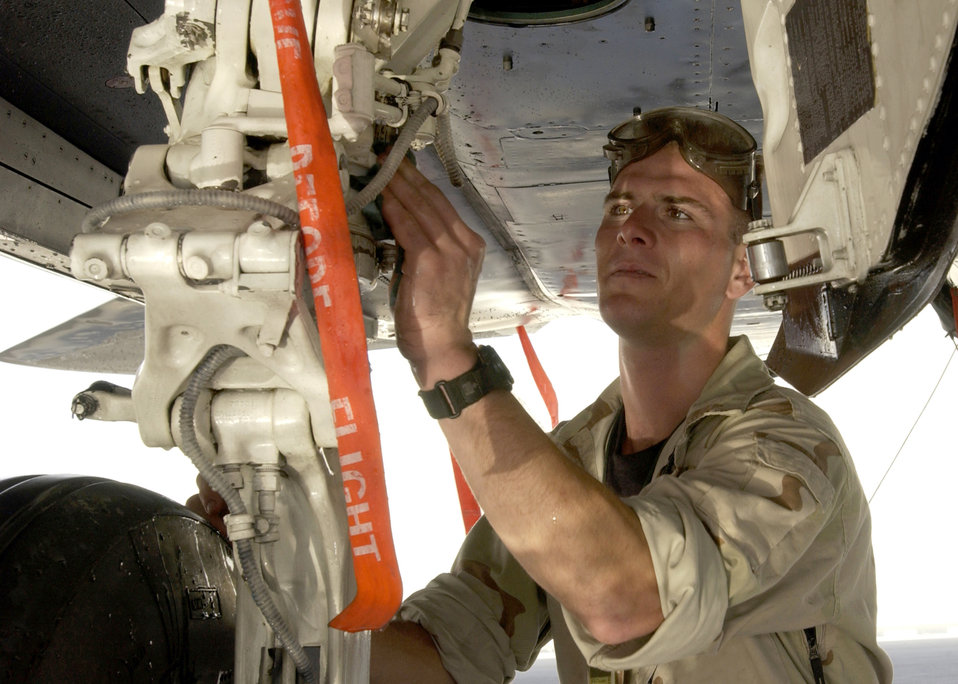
A clean strut

SOUTHWEST ASIA -- Staff Sgt. Joseph Salisbury cleans the main strut on an F-15E Strike Eagle aircraft at a forward-deployed location. His goal is to keep sand from entering the mechanical linkage and prevent landing-gear problems. Sergeant Salisbury is a crew chief with the 391st Expeditionary Aircraft Maintenance Unit.